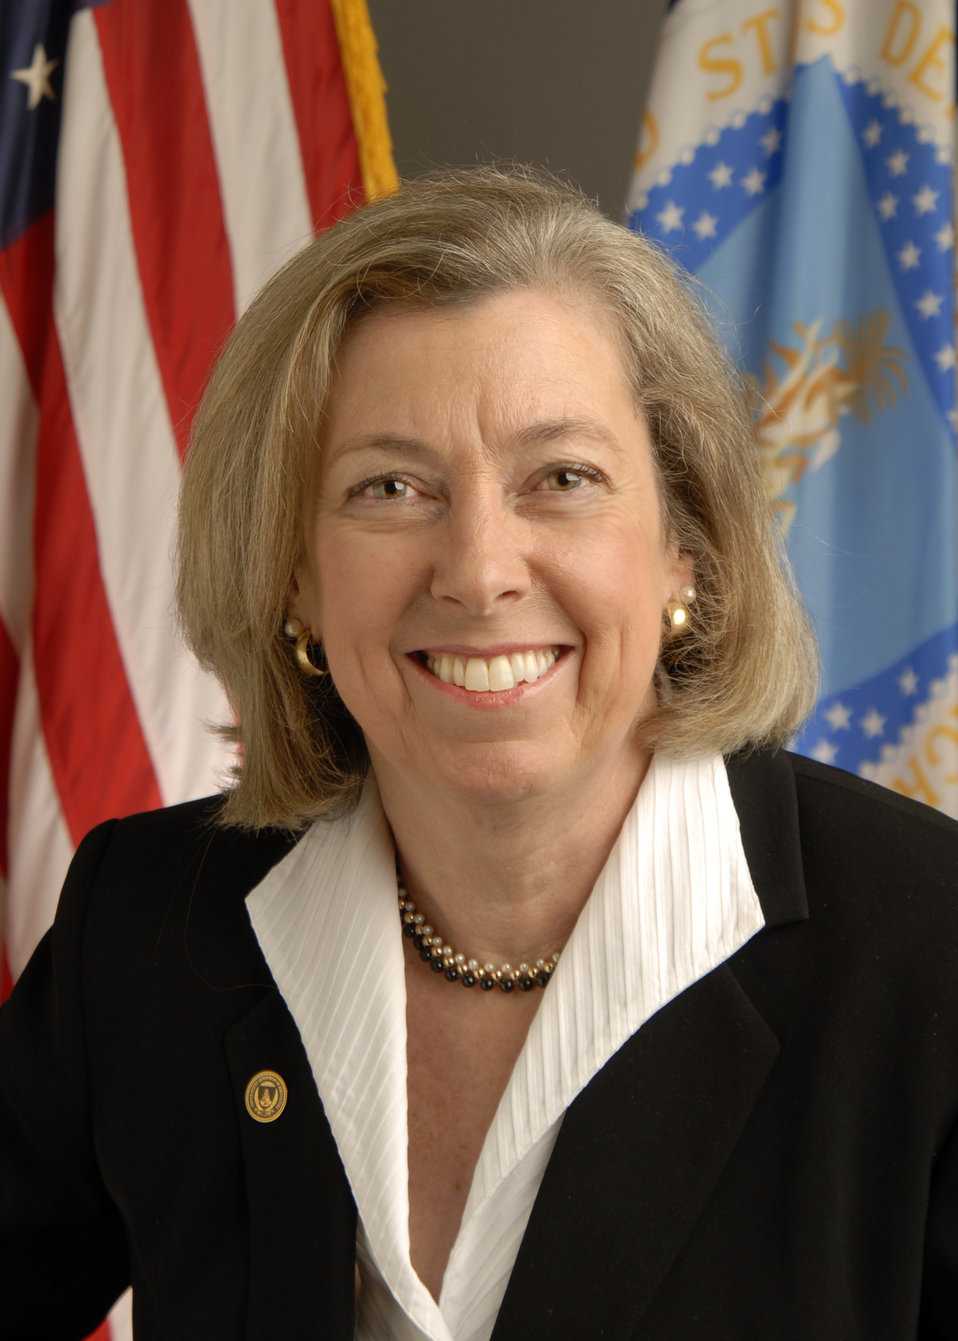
20110517-FAS-KJH-0710 Foreign Agriculture Service, Acting Administrator Suzanne Heinen

Foreign Agriculture Service Acting Administrator Suzanne Heinen.